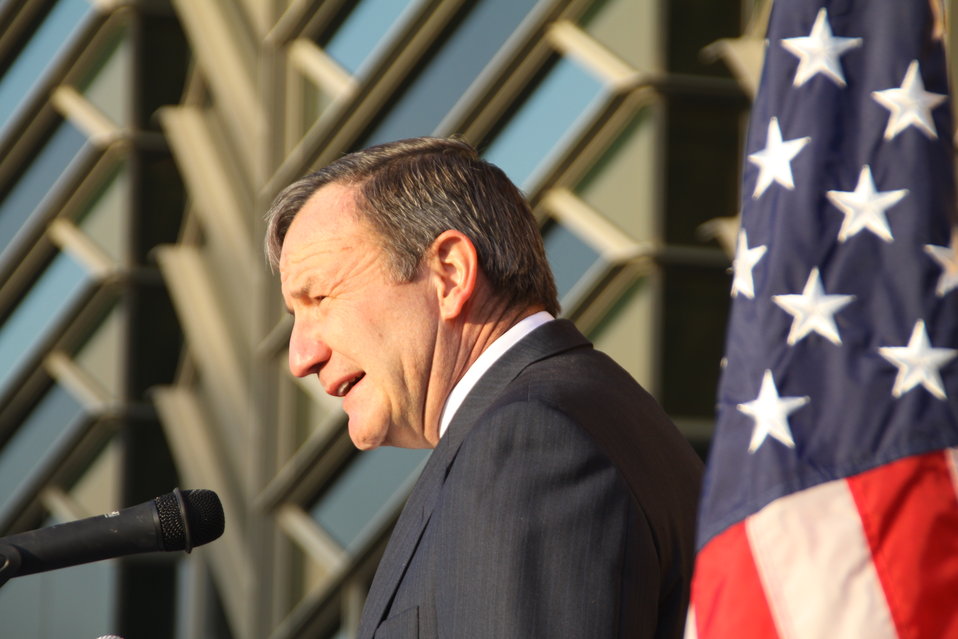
Ambassador Eikenberry